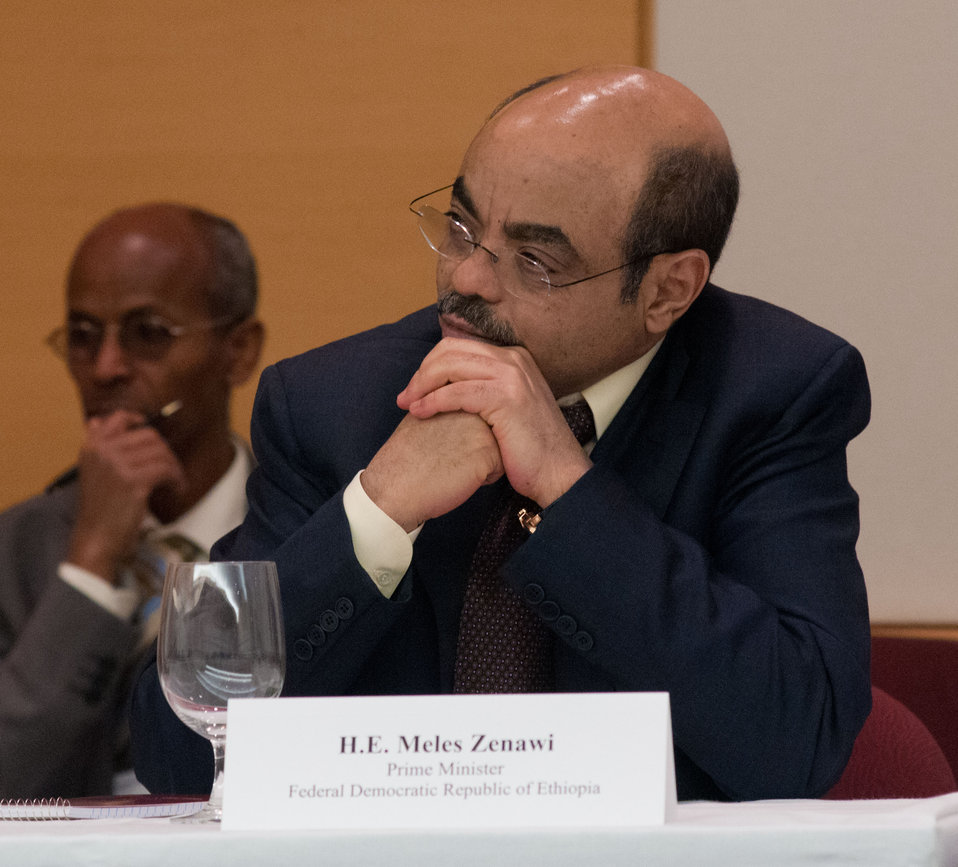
Prime Minister of Ethiopia His Excellency Meles Zenawi, makes remarks at the African Heads of State conference at the Ronald Reagan Federal Building in Washington, D.C., on Friday, May 18, 2012.